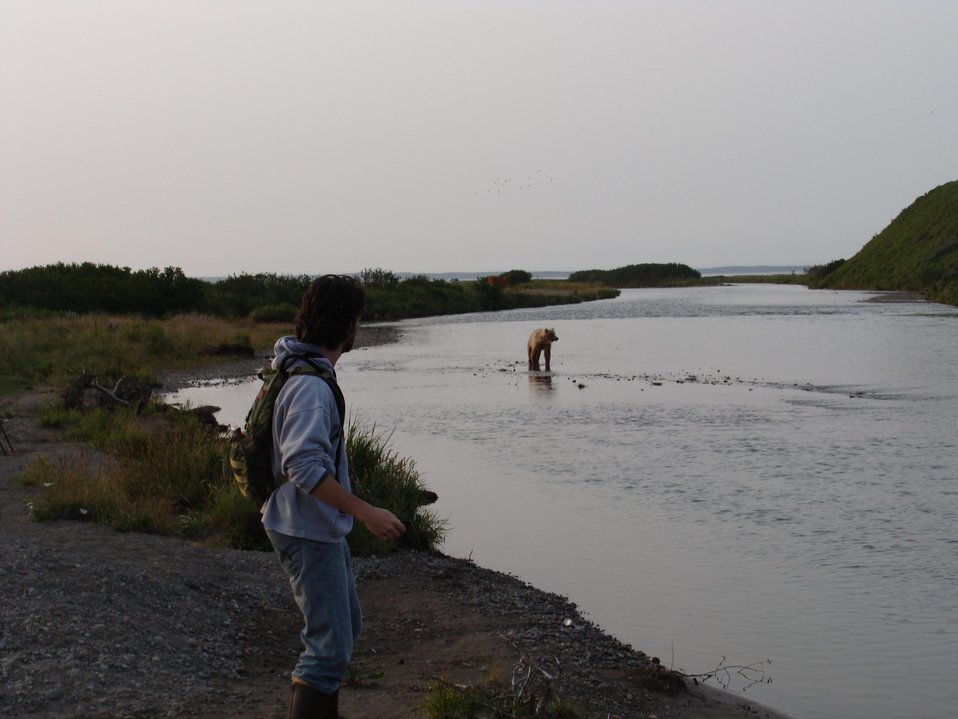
curious grizzly bear, Izembek-Becharof National Wildlife Refuges, AK

Photo: Corey A. Anco, USFWS
2011 Wilderness Fellow